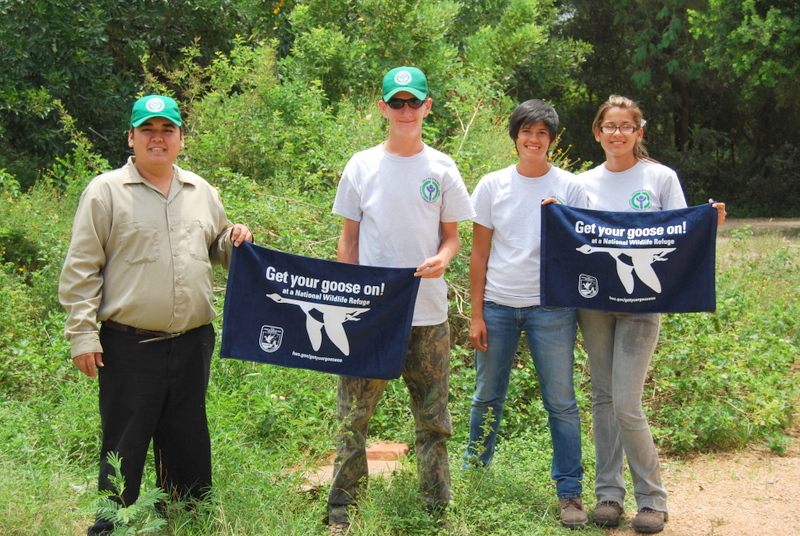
Get Your Goose On!

Photo taken at Santa Ana National Wildlife Refuge in southern Texas.